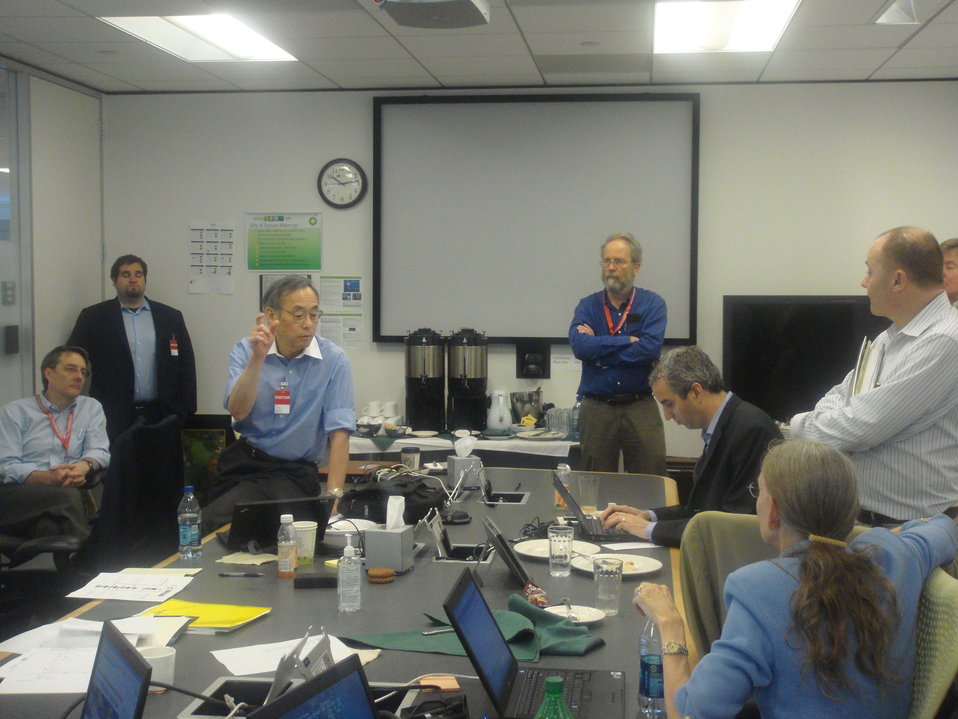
U.S. Energy Secretary Steven Chu confers with scientific experts and BP officials on the 'top kill' strategy